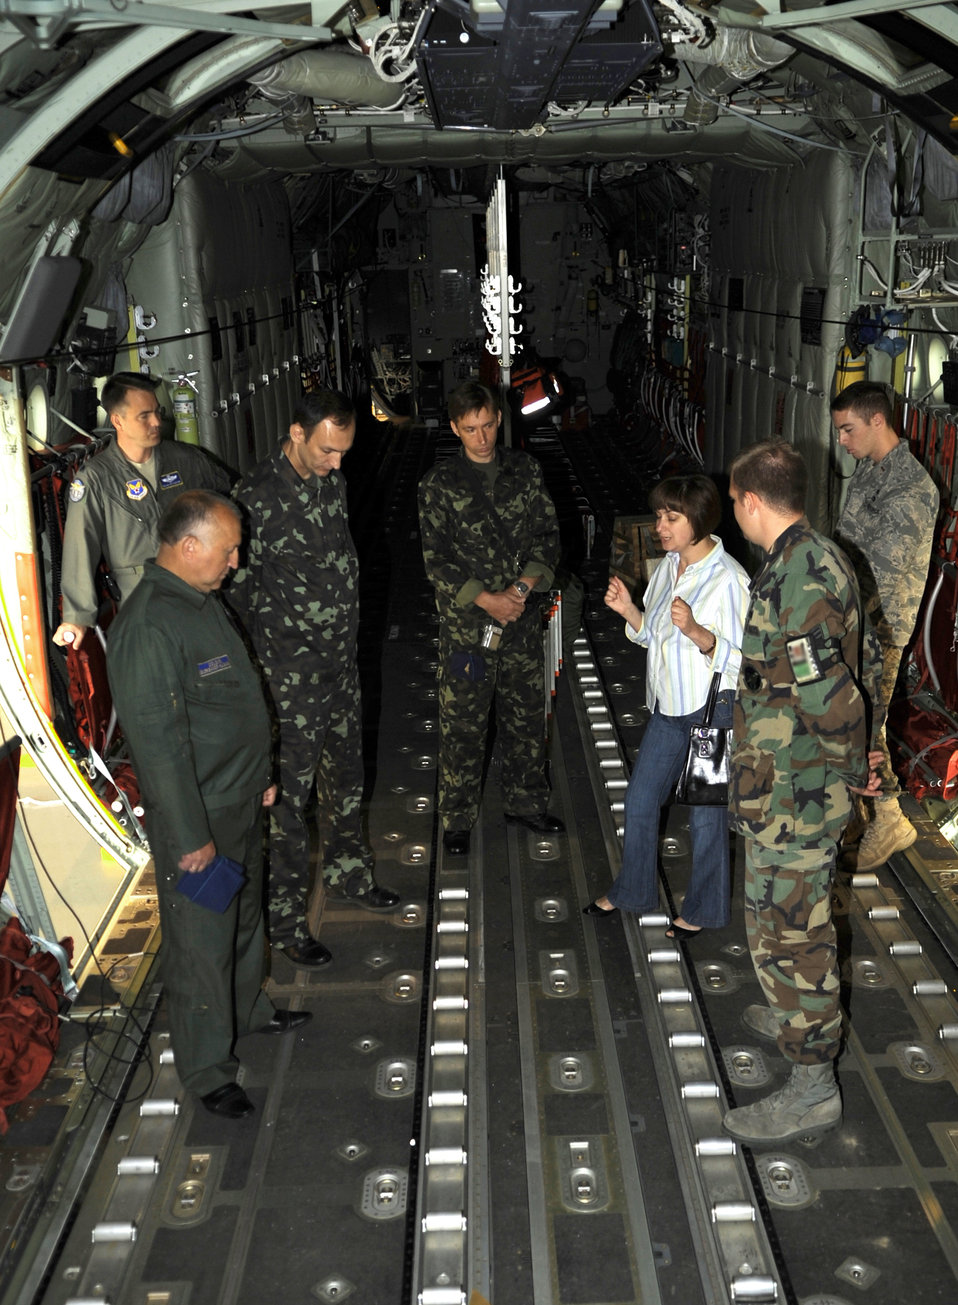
Ukrainian airmen visit Ramstein

Senior Airman Joshua Sauer gives a tour of a C-130J Super Hercules to Ukrainian air force members June 24, 2010, during a visit to Ramstein Air Base, Germany. The goal of the Ukrainian visit was to help advance military interoperability and build international partnerships. Airman Sauer is the 86th Maintenance Squadron C-130J crew chief.